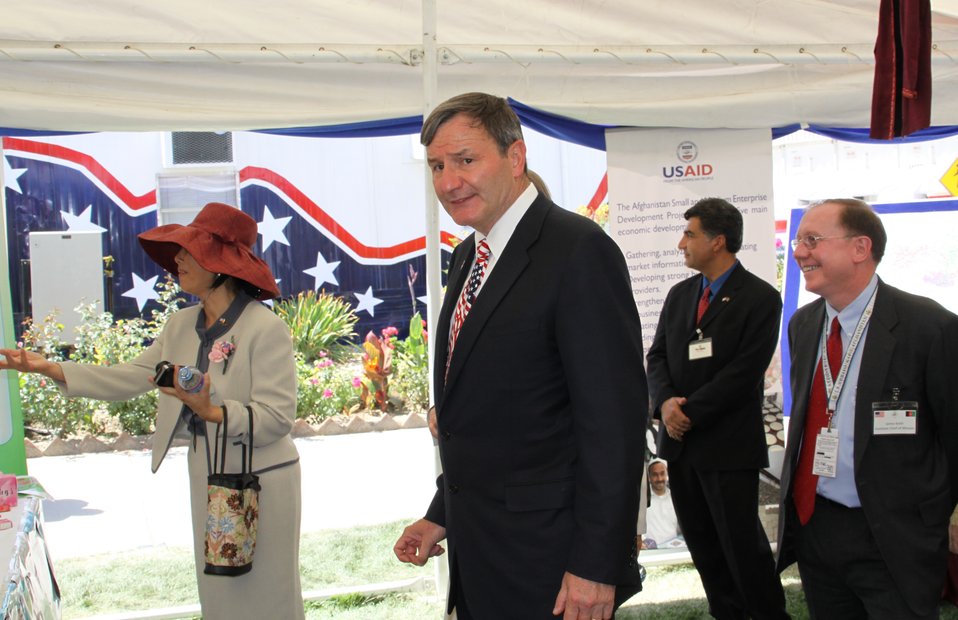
Kabul Official July 4th Celebration